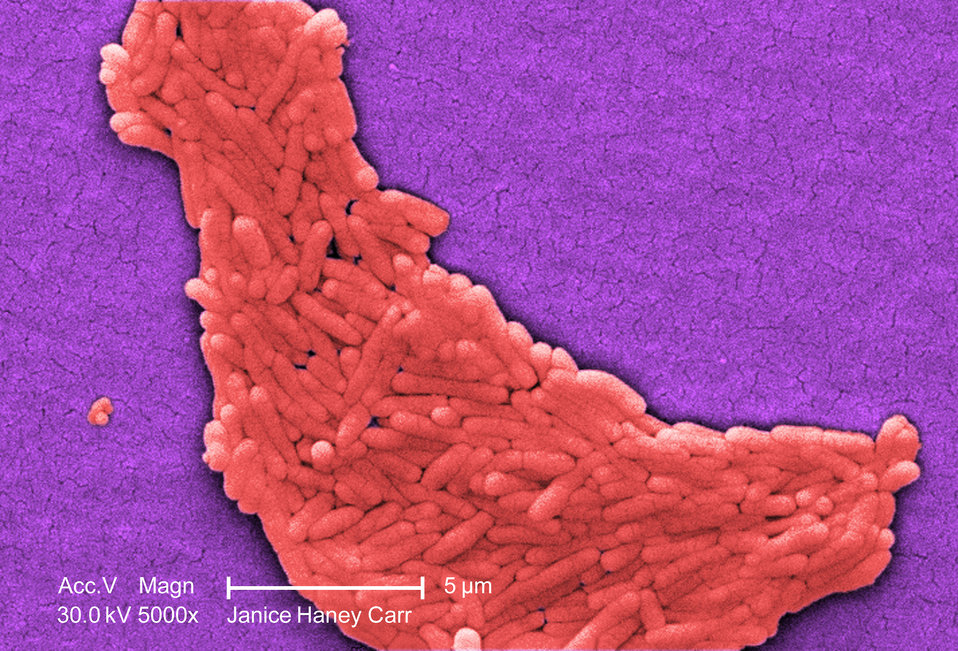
Under a moderately-high magnification of 5000X, this colorized scanning electron micrograph (SEM) revealed the presence of a large grouping of Gram-negative Salmonella typhimurium bacteria that had been isolated from a pure culture. See PHIL 10979 for a black and white version of this image.How do people catch Salmonella??